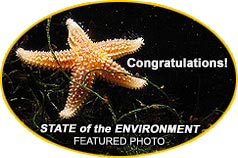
Look for the Sea Star!

Throughout the year, EPA will be featuring photos submitted to State of the Environment.

That means we'll be showing off your work on our project blog
and EPA's Facebook Page, but it doesn't end there...

Featured photos have a chance to be part of the State of the Environment exhibit that will travel the United States from April 2012 and end up at the National Archives Building in Washington, D.C. in April 2013.

What are you waiting for? Get snappin'!

Thank you to JR Cummings on Flickr for his permission to use this photo: www.flickr.com/photos/jrcummings/6414821627/in/pool-16672...